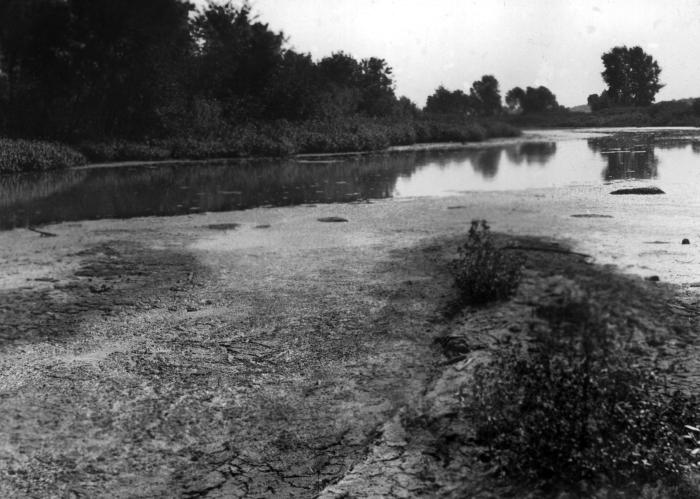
This was a 1924 photograph of Shellrock River located near the town of Albert Lea, Minnesota. The historic image revealed the river's pollution, which had been caused by the waste from a canning factory that was being dumped into these waters, and in places, created a film that covered the surface.